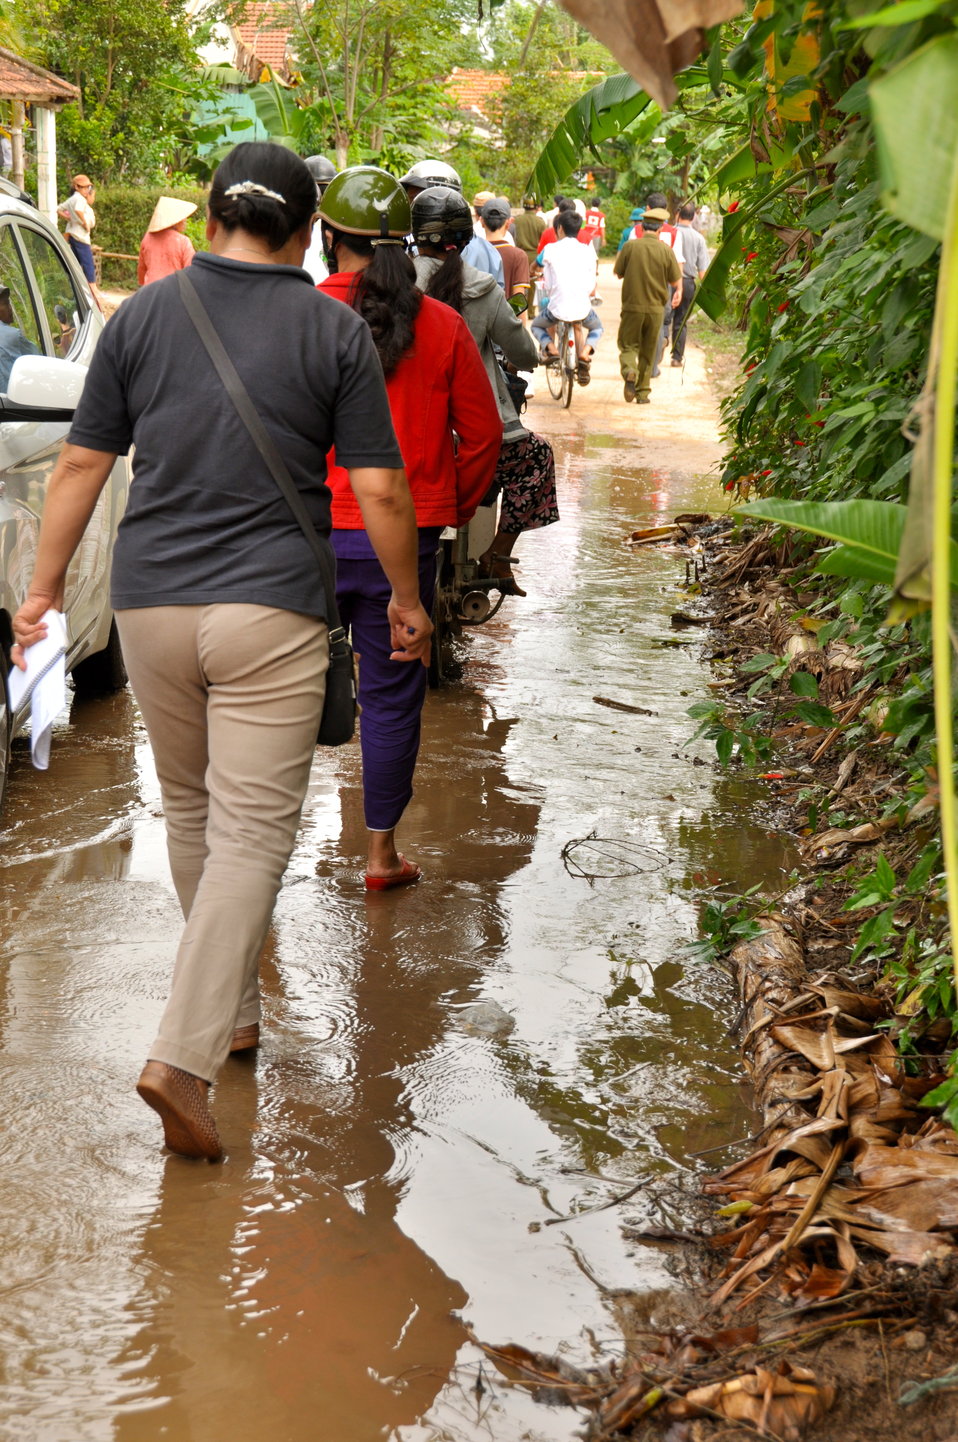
USAID and Save the Children support community evacuation drill and emergency preparedness in central Vietnam

Loc An Commune, Phu Loc District, Thua Thien Hue Province
December 4, 2012, Photo: Richard Nyberg, @USAIDVietnam